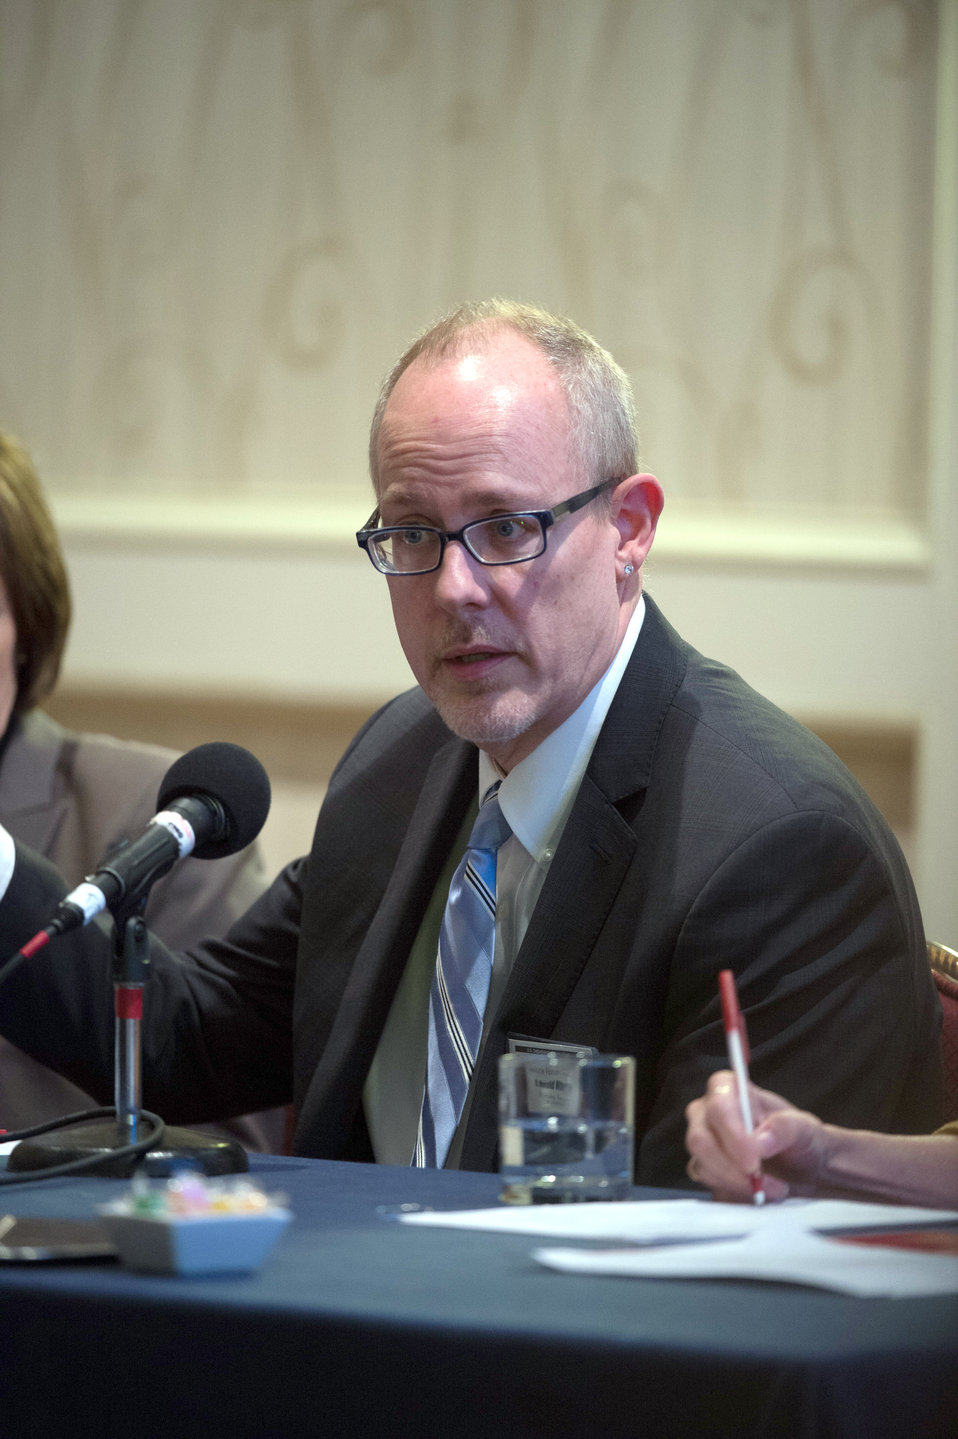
Mountain Farms Incorporated Health Services Director G. Donald Ritter speaks at the panel on Protecting U.S. Animal and Plant Health from Invasive Pests at the 2014 Agricultural Outlook Forum on Thursday, Feb. 20, 2014 in Arlington, VA. The panel discussed how the U.S. Department of Agriculture (USDA) is protecting U.S. agricultural health from invasive pests in times of diverging stakeholder interests and constraining resources. The session focused on USDA’s collaborative work with States, industries, and international trade. USDA’s annual Agricultural Outlook Forum brings together the agricultural community to discuss policy, trade, science, rural development, and the economic outlook for the coming year. The Forum also focuses on forestry, health and nutrition issues, and the changing dynamics and face of rural America.